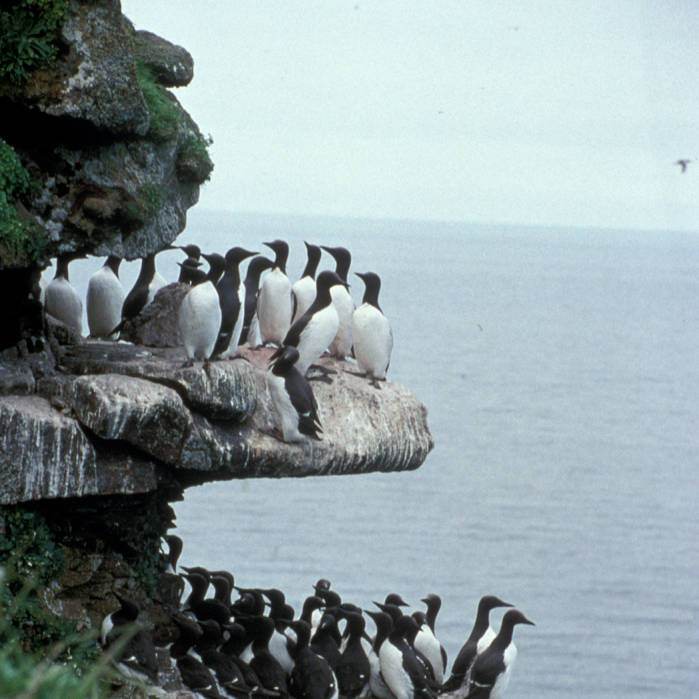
murres

Alaska Maritime National Wildlife Refuge